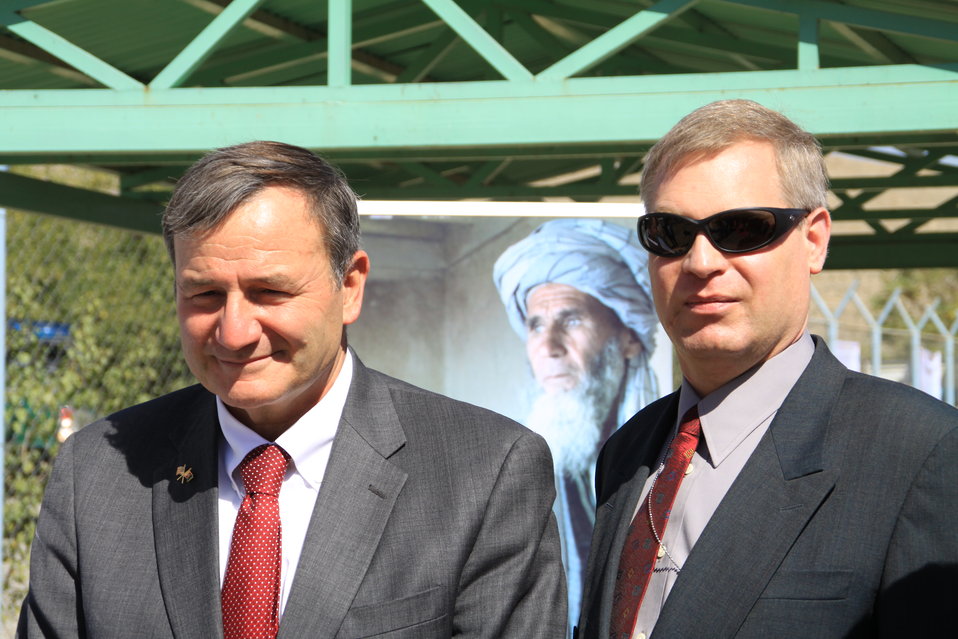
AVIPA Plus Wheat Seed Distribution 101005

US Ambassador Karl Eikenberry and USAID Acting Mission Director Kevin Brownawell joined the Minister of Agriculture, Irrigation and Livestock, H.E. Minister Mohammed Rahimi in signing a Memorandum of Understanding and distributing vouchers to area farmers for wheat and fertilizer.

US Ambassador Karl Eikenberry and USAID Acting Mission Director Kevin Brownawell joined the Minister of Agriculture, Irrigation and Livestock, H.E. Minister Mohammed Rahimi in signing a Memorandum of Understanding and distributing vouchers to area farmers for wheat and fertilizer.

US Ambassador Karl Eikenberry and USAID Acting Mission Director Kevin Brownawell joined the Minister of Agriculture, Irrigation and Livestock, H.E. Minister Mohammed Rahimi in signing a Memorandum of Understanding and distributing vouchers to area farmers for wheat and fertilizer.